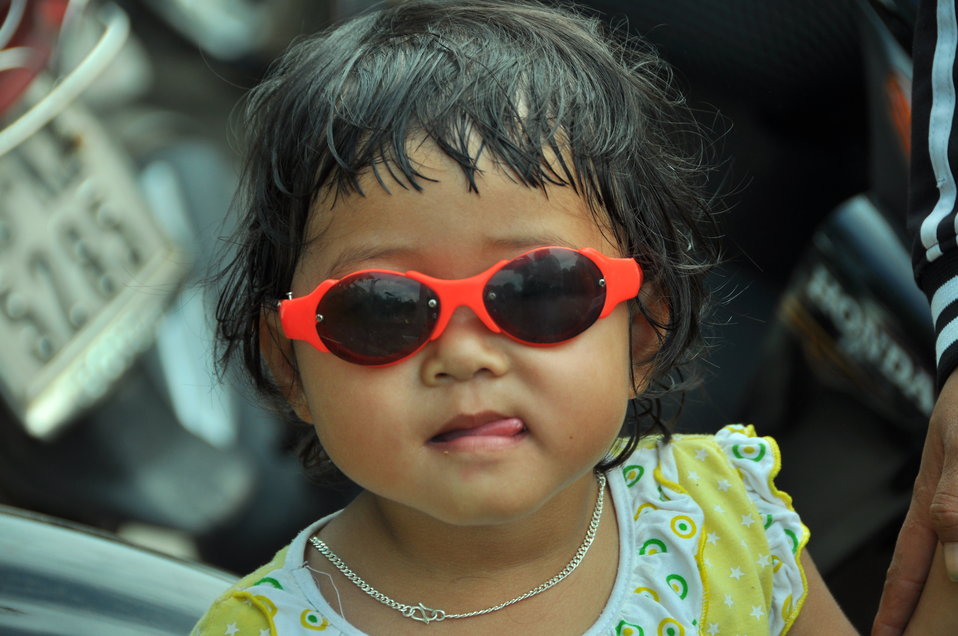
USAID, Red Cross Support Disaster Response Drill in Duy Hoa Commune, Quang Nam Province

Duy Hoa Commune, Quang Nam Province
December 5, 2012